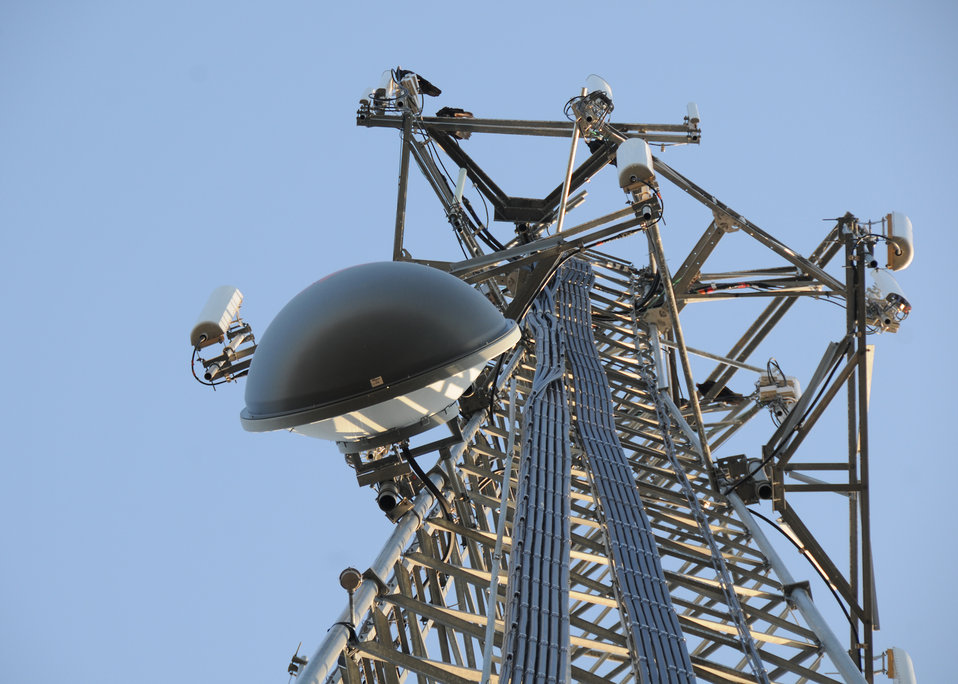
A new cell tower in Medicine Park, Oklahoma helps local communities in Commanche county connect to the internet.